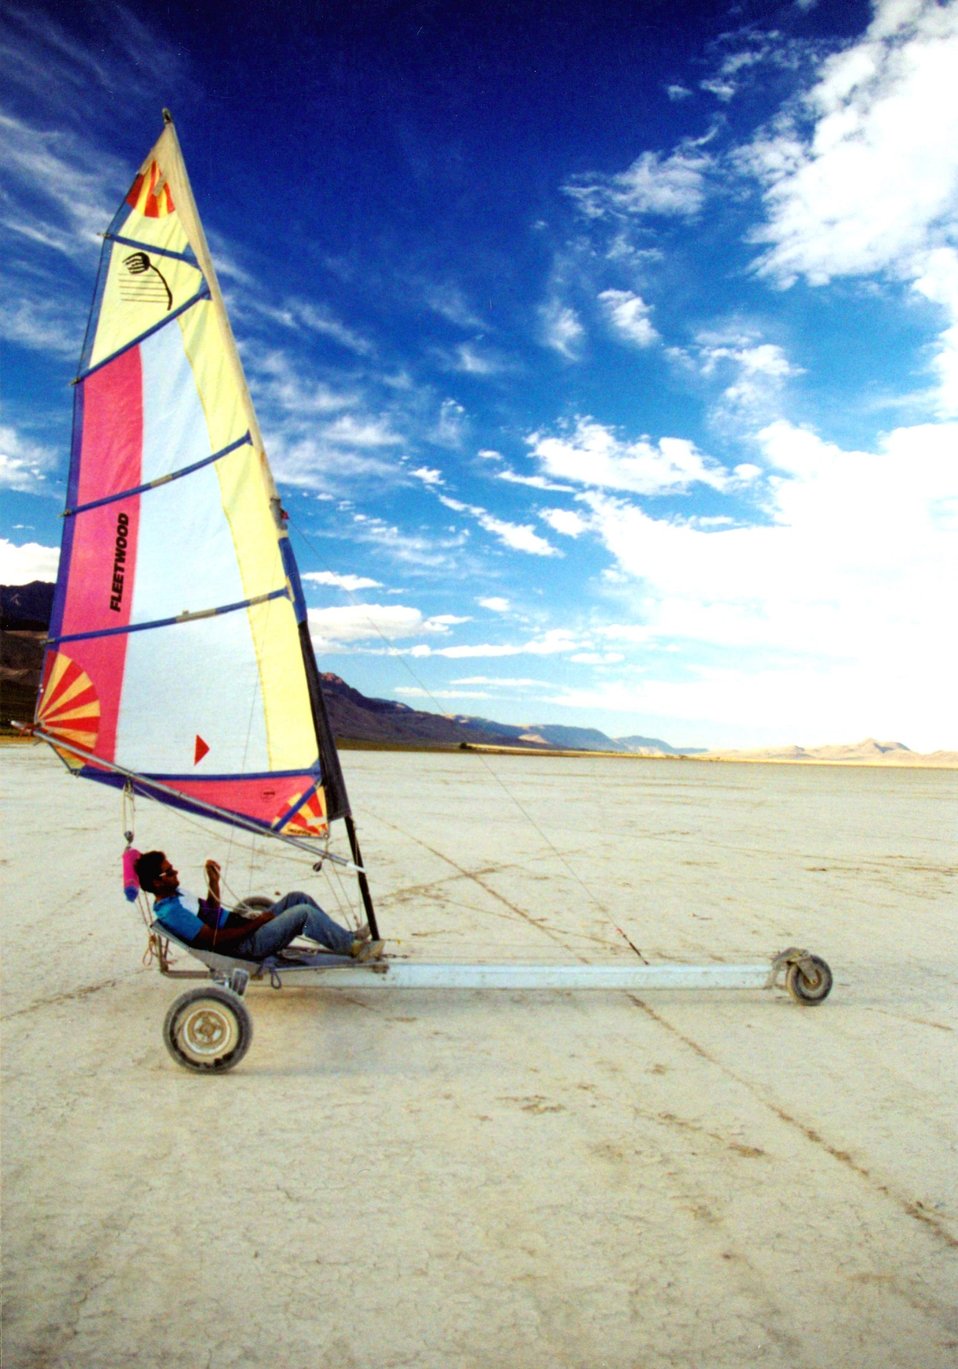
Sand Saling on the Alvord Desert in eastern Oregon.